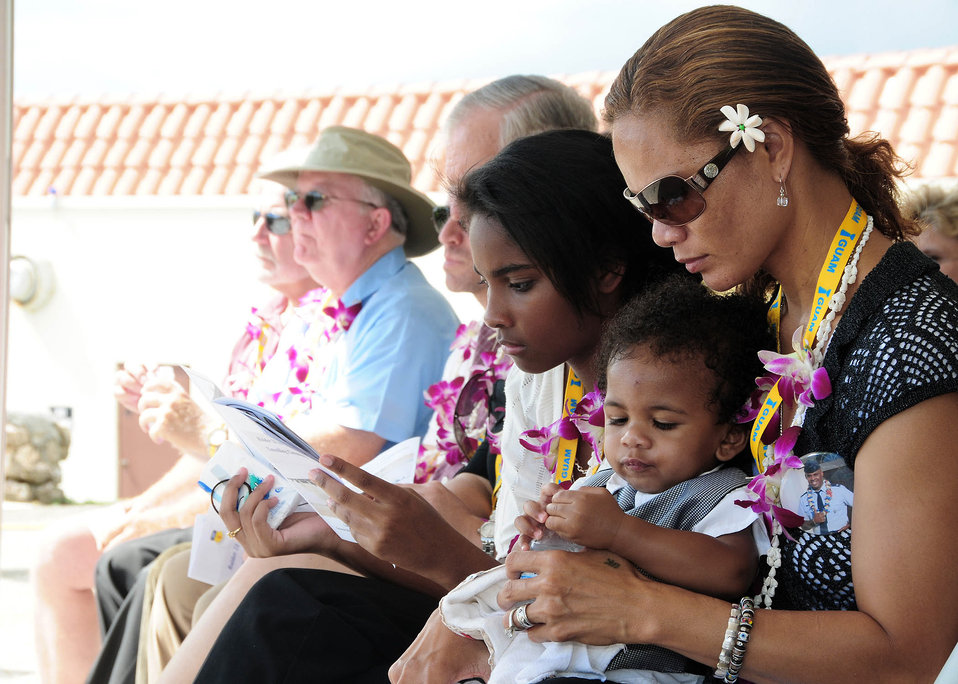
RAIDR 21 memorial

Ursula Martin, along with children Guahan (center) and Gemini, take a moment to reflect on the life of their loving husband and father, Col. George Martin, July 20 during a memorial unveiling ceremony at the Governor's Complex at Adelup Point in Hagatna, Guam. More than 300 family, friends and guests attended the ceremony to remember the six aircrew members of the B-52 Stratofortress -- call sign RAIDR 21, who lost their lives when the bomber crashed July 21, 2008, about 25 miles off the coast of Guam.